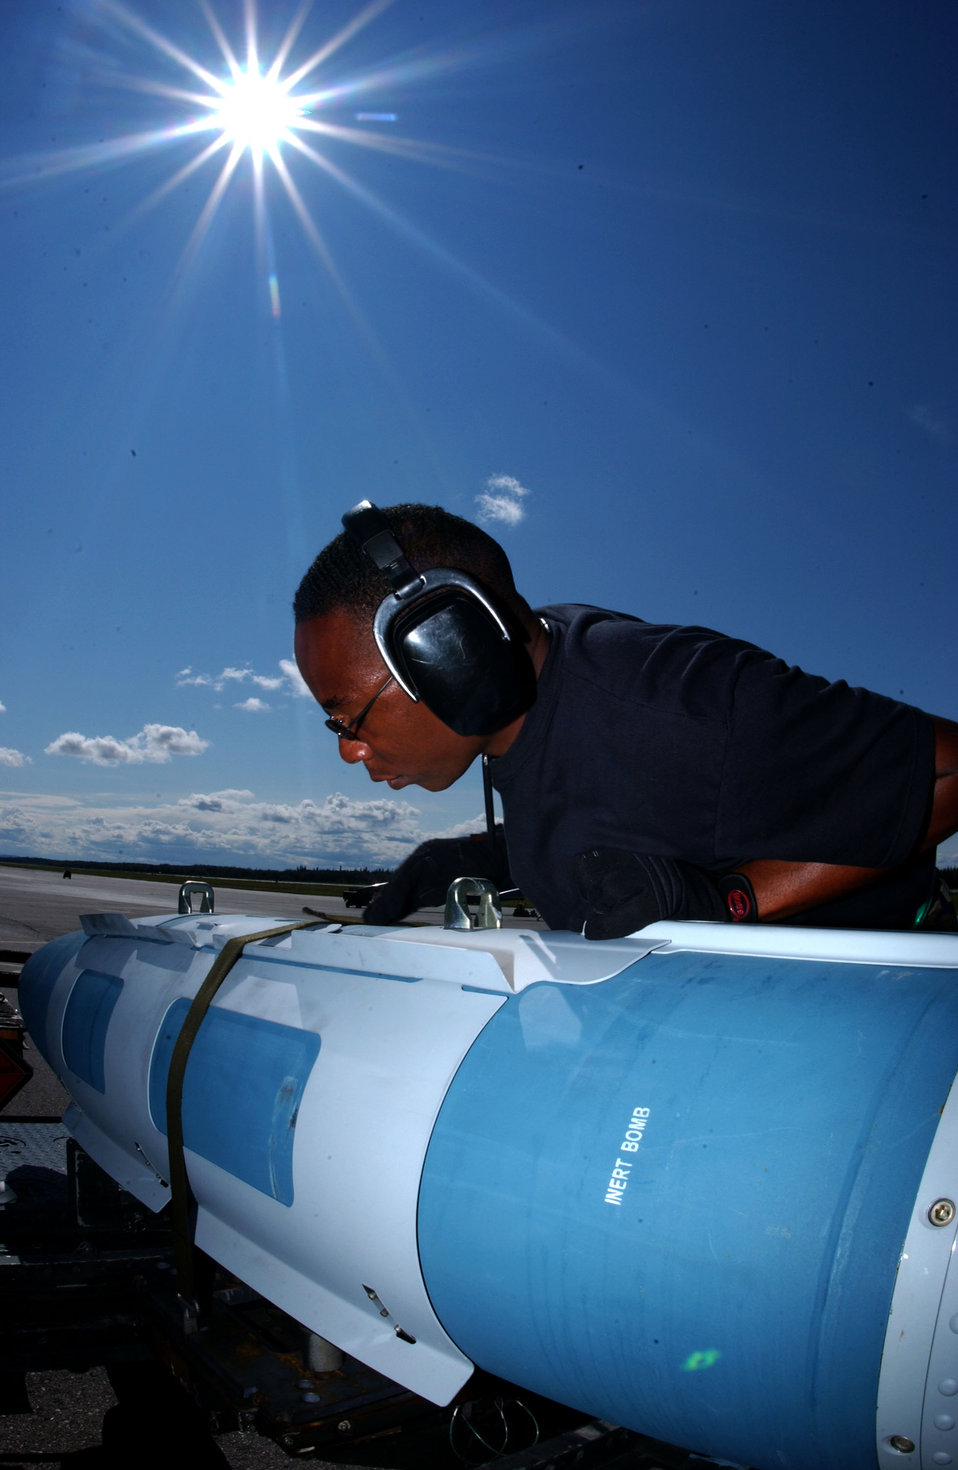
Strike Eagle fully loaded

Staff Sgt. Ray Saunders secures a guided bomb unit-31 bomb at Eielson Air Force Base, Alaska, July 24 during Red Flag-Alaska 07-3. Sergeant Saunders is a weapons armament systems specialist with the 4th Aircraft Maintenance Squadron at Seymour Johnson Air Force Base, N.C.,